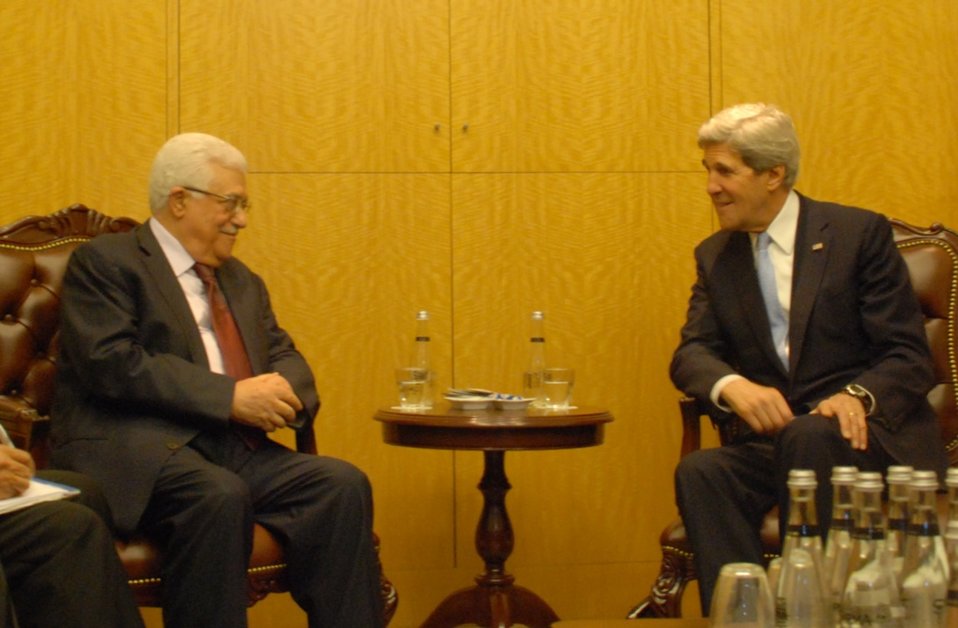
Secretary Kerry Meets With Palestinian President Abbas

U.S. Secretary of State John Kerry meets with Palestinian President Mahmoud Abbas in Istanbul, Turkey on April 21, 2013.